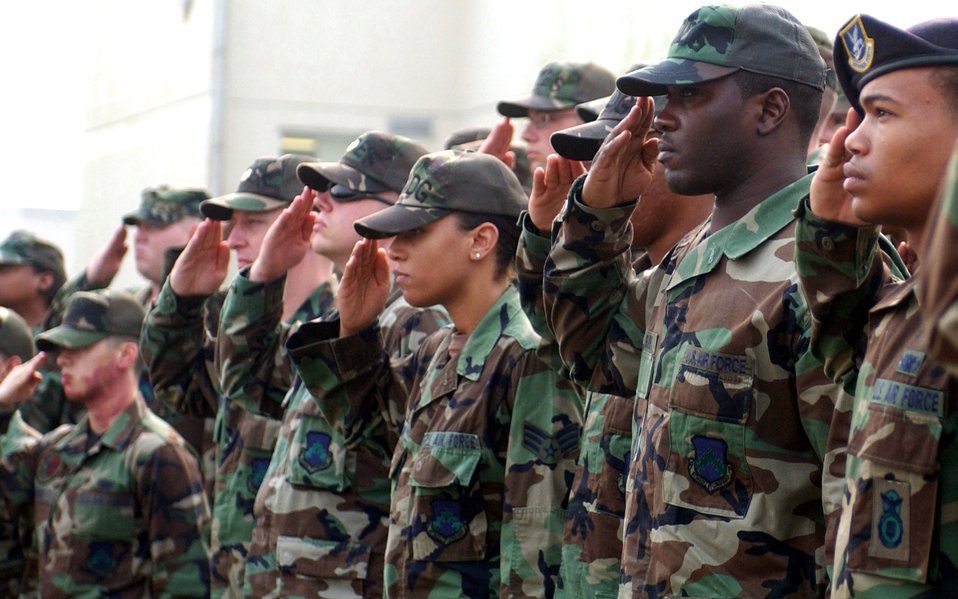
Kunsan Airmen remember Sept. 11

Airmen from the 8th Fighter Wing render salutes for the raising of the U.S. flag during the Sept. 11, 2001, remembrance ceremony Sept. 11 at Kunsan Air Base, South Korea. The ceremony marked the sixth anniversary of the terrorist attacks in New York City, the Pentagon and Shanksville, Pa.